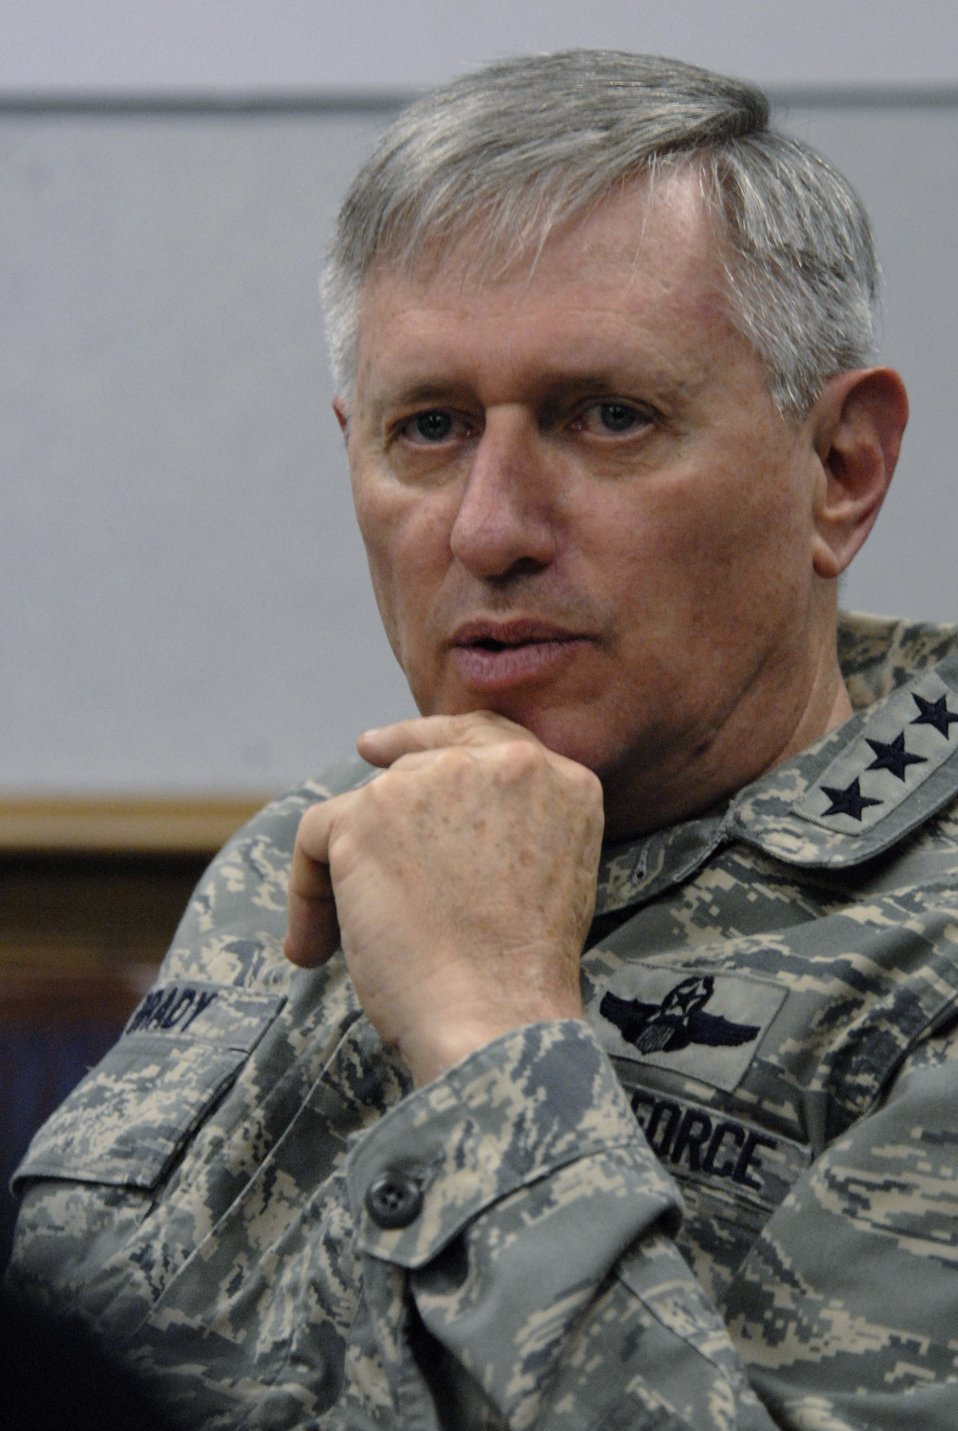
Manpower, personnel, services leader offers parting thoughts

Lt. Gen. Roger A. Brady expresses his thoughts on the challenges and successes of Air Force manpower, personnel and services during his tenure as senior officer in charge from June 2004 to January 2008. General Brady is now headed to Ramstein Air Base, Germany, where he will serve as commander of U.S. Air Forces in Europe.